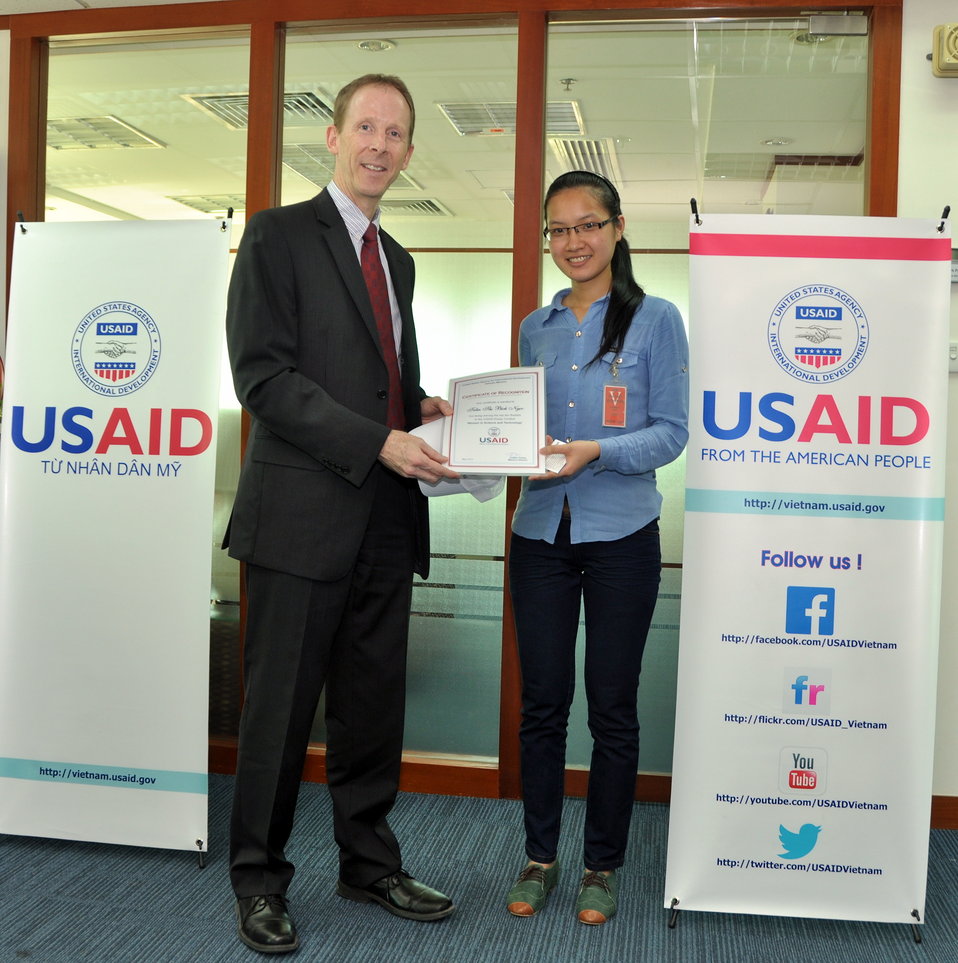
Women in Science and Technology Essay Contest Award Ceremony

USAID Mission Director Joakim Parker awards a certificate of recognition to Ms. Tran Thi Bich Ngoc, a student from Hanoi University of Commerce, who is among top 10 finalists in the USAID Women in Science and Technology Essay contest, on May 16, 2013.